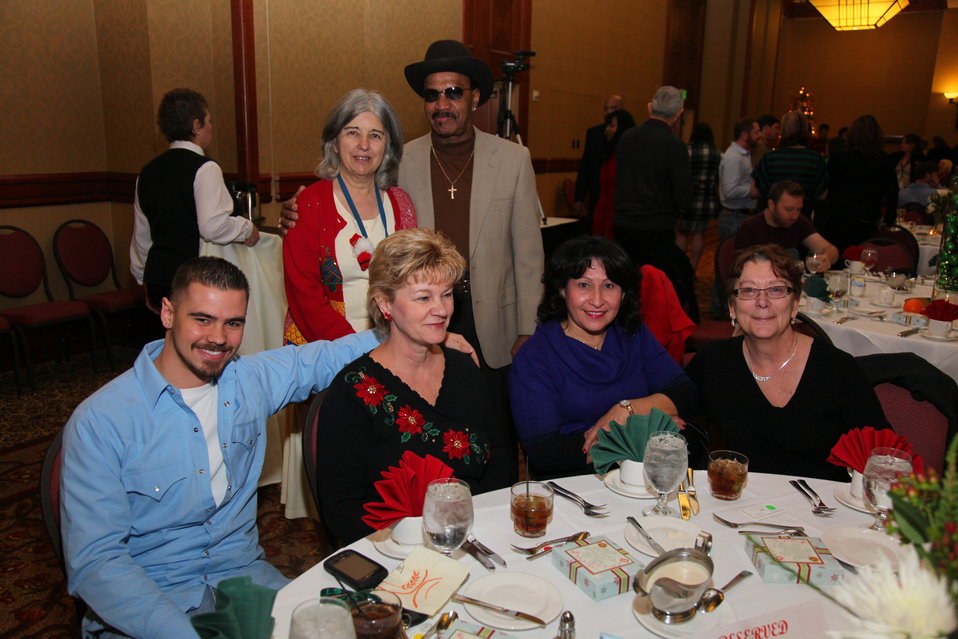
Sacramento District Holiday Party 2011